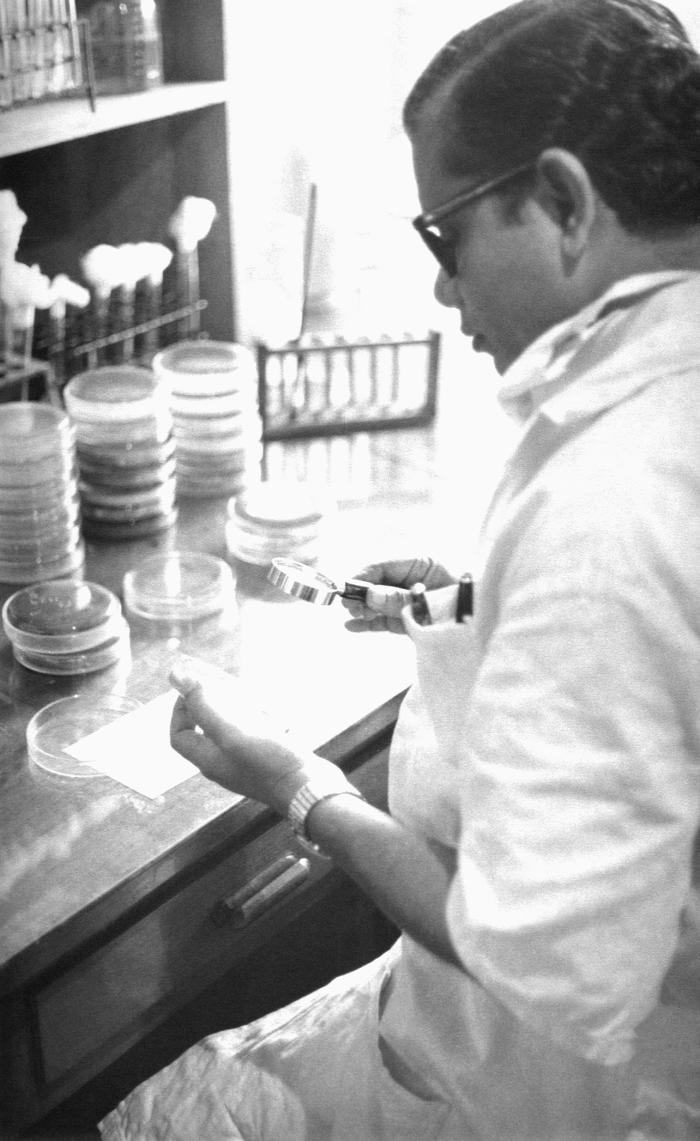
This image depicted a technician in a Bangladesh laboratory who was in the process of conducting an analysis of Petri dish cultures. This photograph was taken by Dr. Stan Foster, EIS, Officer, Class of 1962, while he was part of the worldwide Global Smallpox Eradication Campaign of the late 1960s, early 1970s.